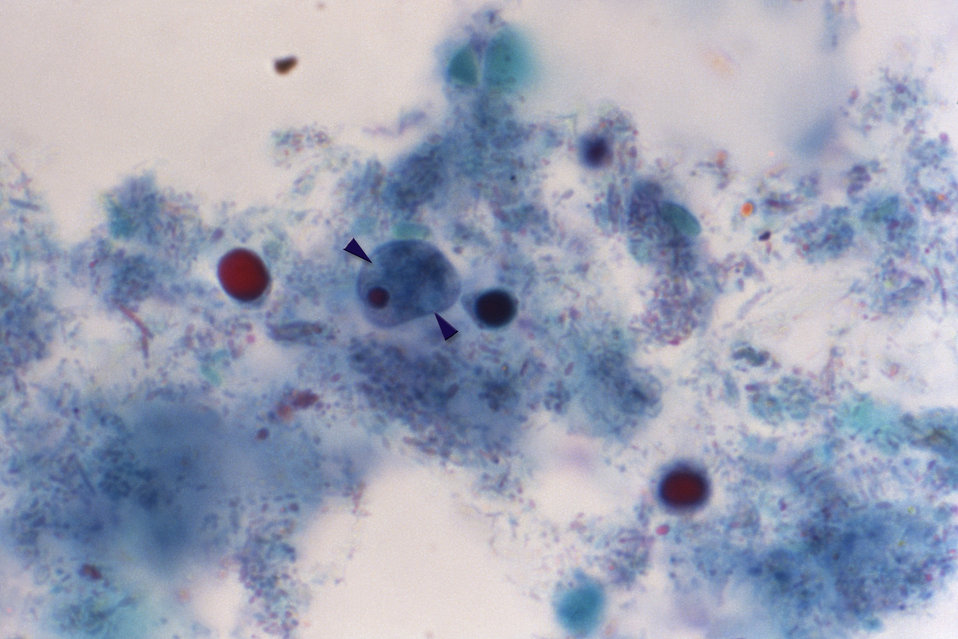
This trichrome-stained photomicrograph depicts a single Iodamoeba buetschlii parasitic cyst within which you'll note two achromatic glycogen granules (arrows), as well as a single, darkly-stained intranucleic karyosome.